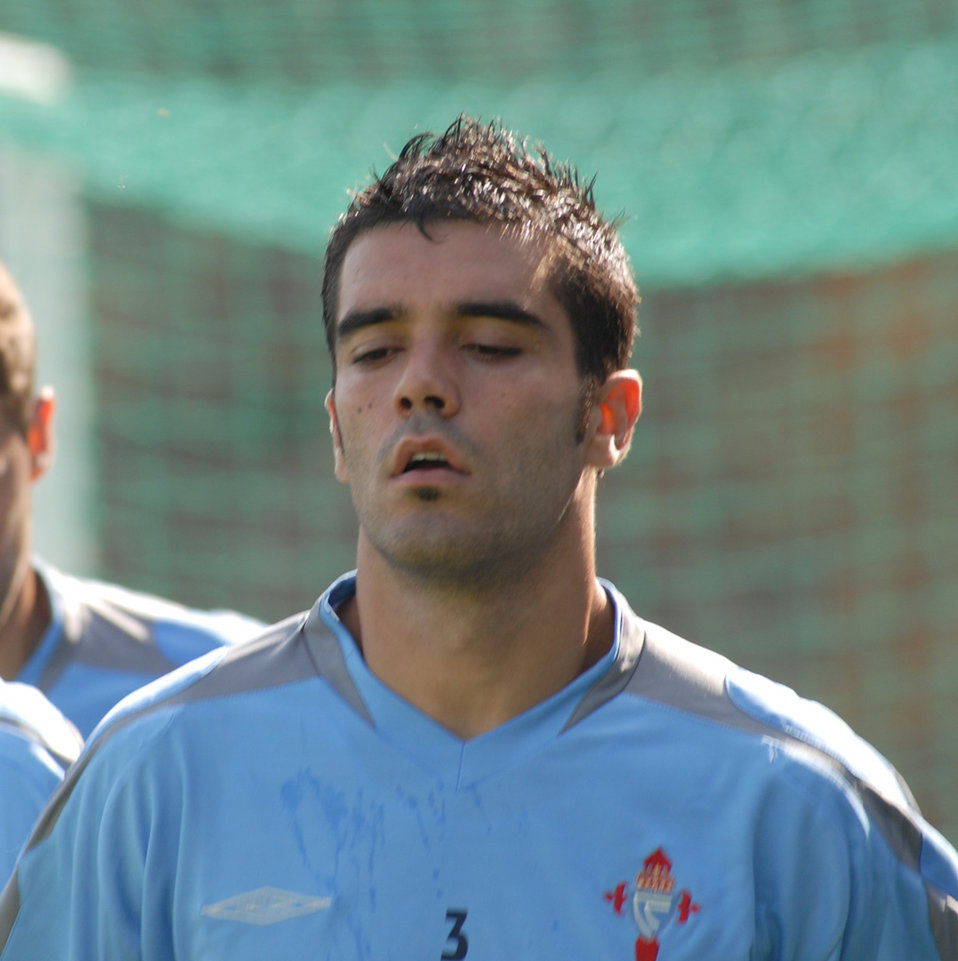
Galego: Iago Bouzón, futbolista do Celta de Vigo. Publish by= Luis Miguel Bugallo Sánchez.